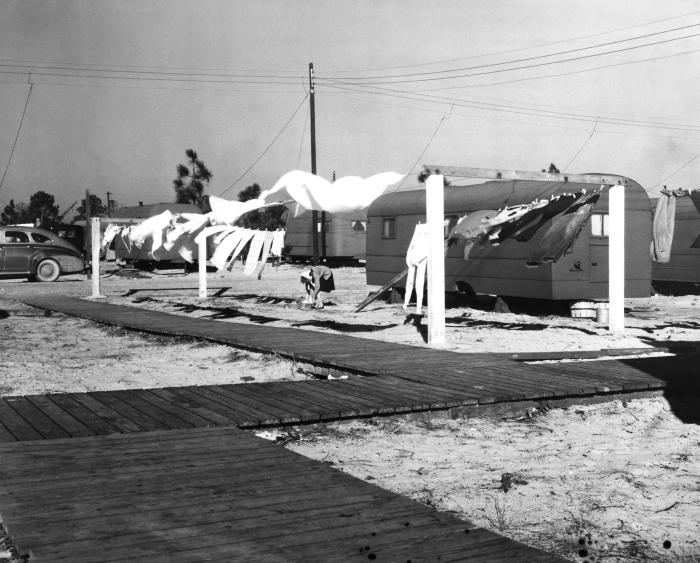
Provided by the Center for Disease Control's (CDC), National Institute for Occupational Safety and Health (NIOSH), this historic 1943 image depicted a view of a North Carolina workcamp trailer park, which was located onsite at an industrial workplace. In this particular view, a female trailer park resident could be seen hanging newly washed laundry upon make-shift clothes lines so that they could be air-dried.